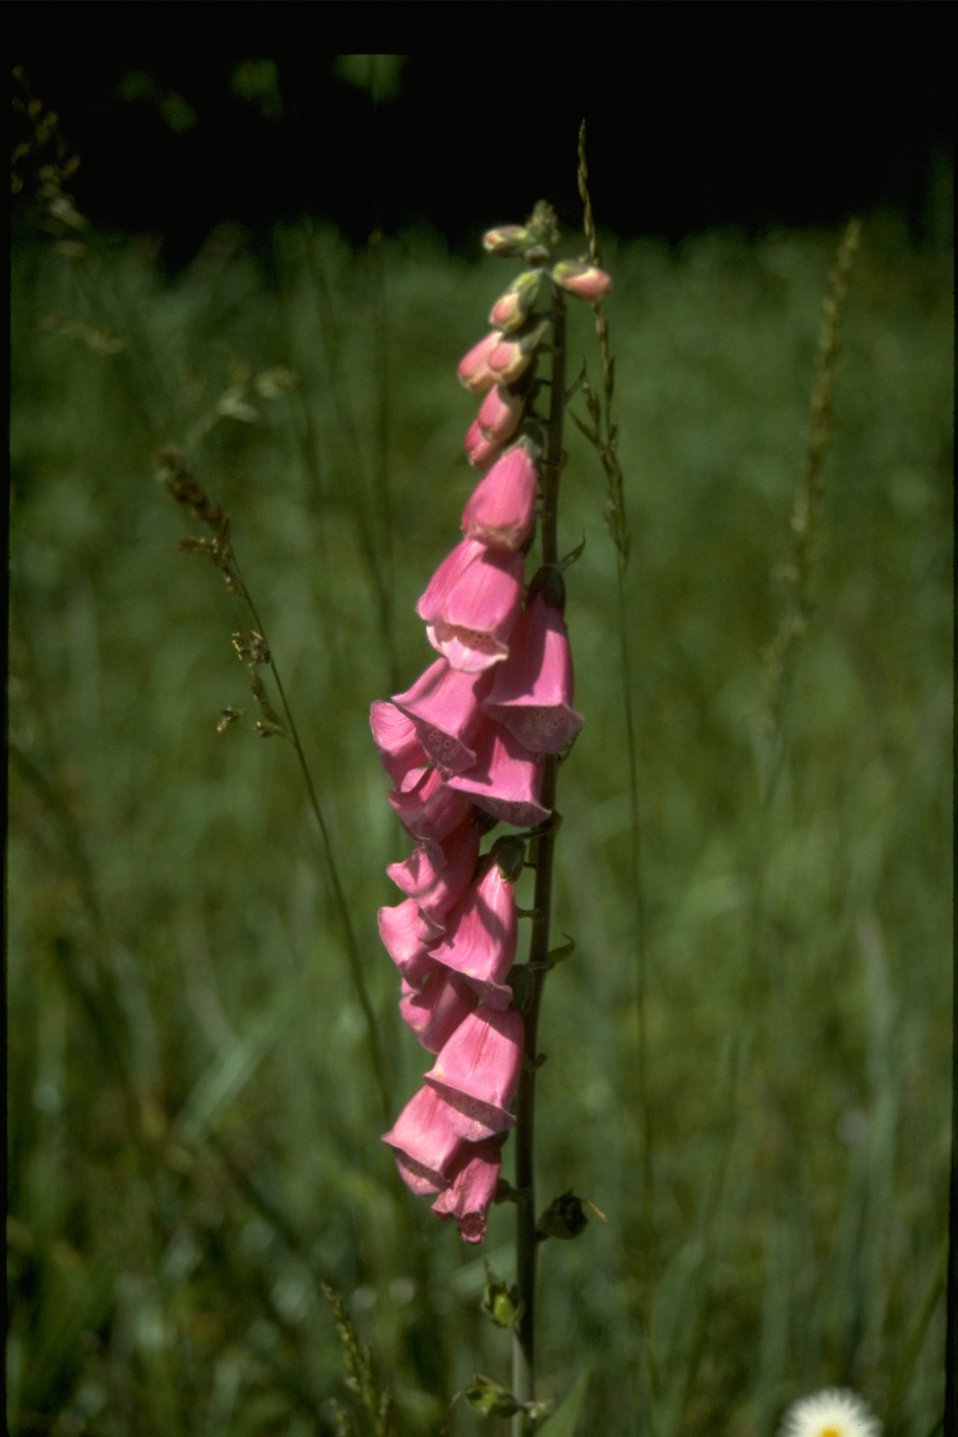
Foxglove of the genus Digitalis.